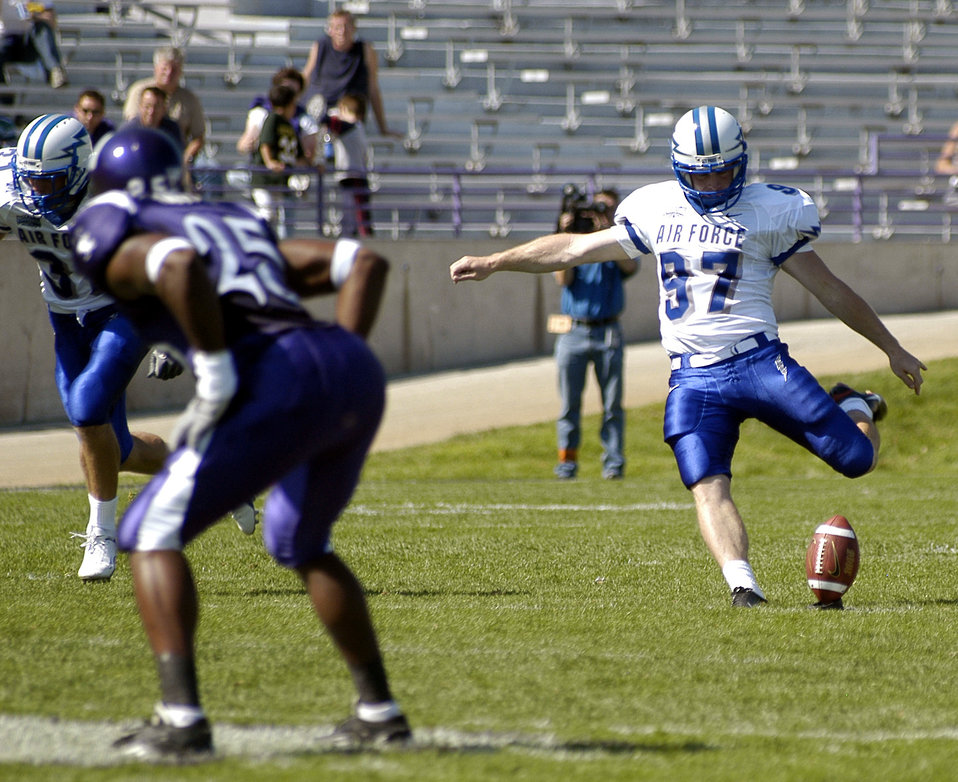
Kick off

EVANSTON, Ill. -- Air Force Academy Falcon kicker Joey Ashcroft kicks off to the opposing Northwestern Wildcats. Ashcroft kicked the game-winning 25-yard field goal with 2:01 left to play in the fourth quarter. The Falcons won 22-21 and advance to 2-0.